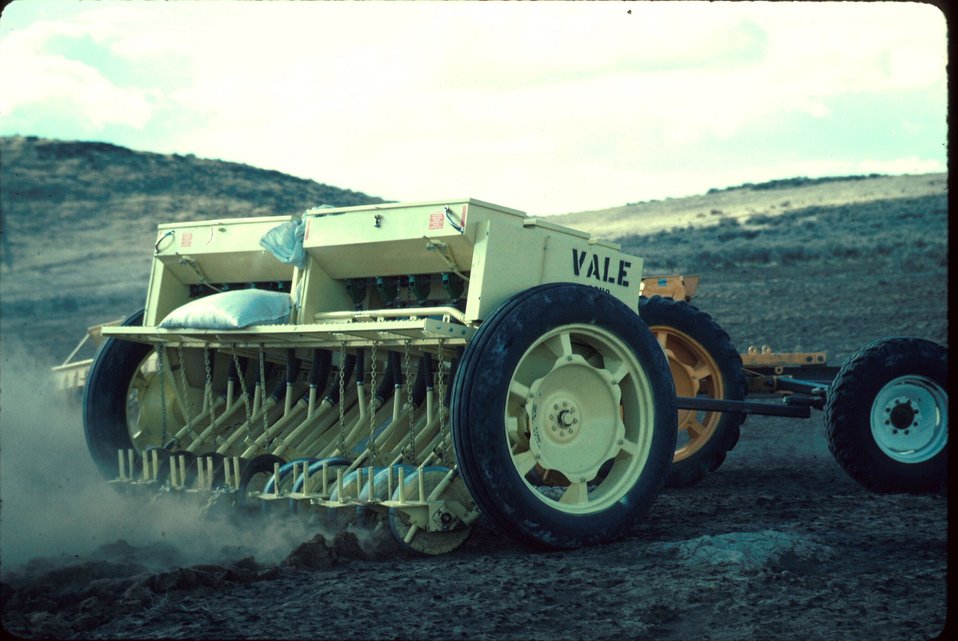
Vale District Seeding Range Restoration Project